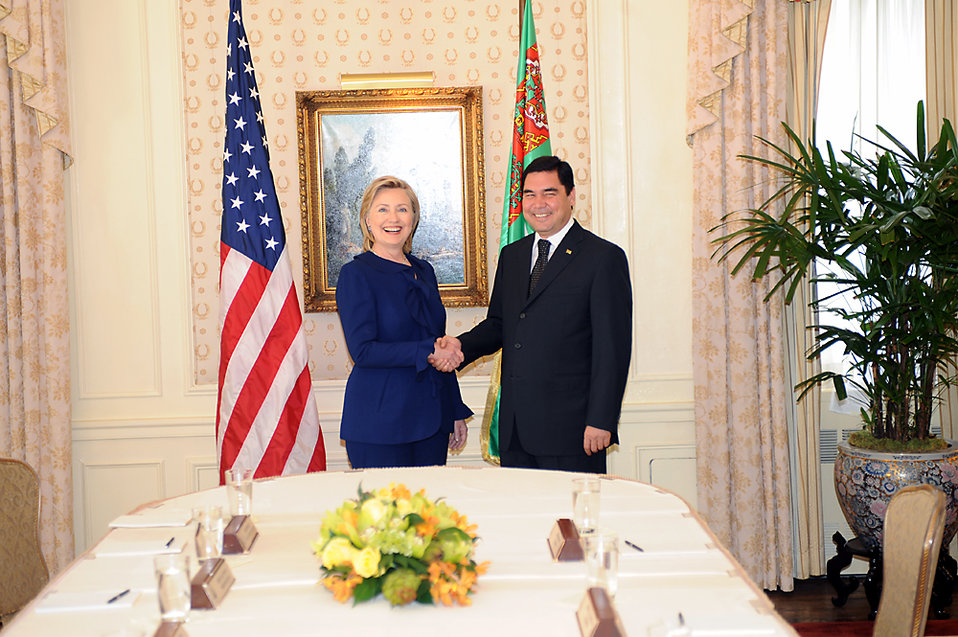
UNGA 2009: Secretary Clinton Meets With Turkmenistan President

U.S. Secretary of State Hillary Rodham Clinton meets with Turkmenistan President Gurbanguly Berdimuhamedov at the Waldorf Astoria hotel during the 64th Session of the UN General Assembly in New York City, New York September 21, 2009.